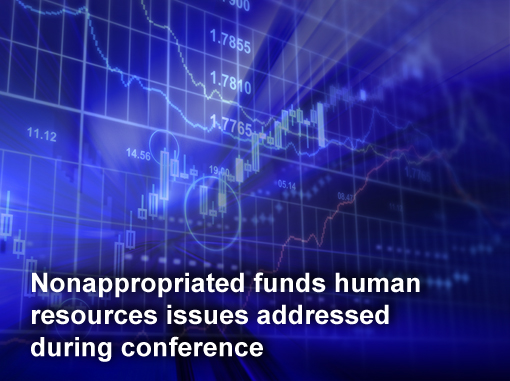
NAF HR conference